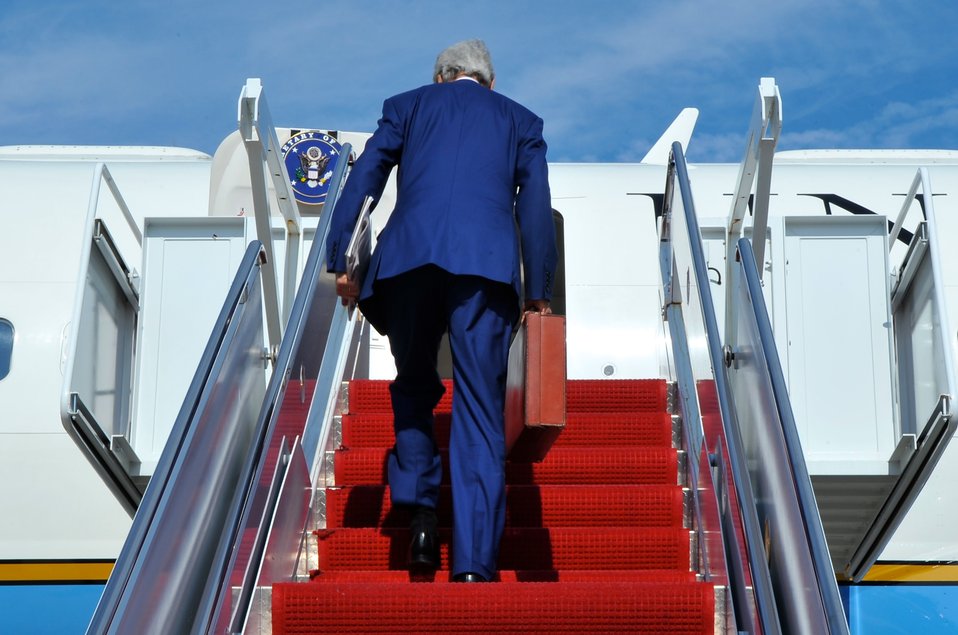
Secretary Kerry Departs to Join President Obama to Europe

U.S. Secretary of State John Kerry boards a jet at Andrews Air Force Base in suburban Washington, DC. on June 2, 2014, as he heads to Warsaw, Poland and Paris, France to accompany President Obama for a D-Day commemoration and series of Allied meetings.